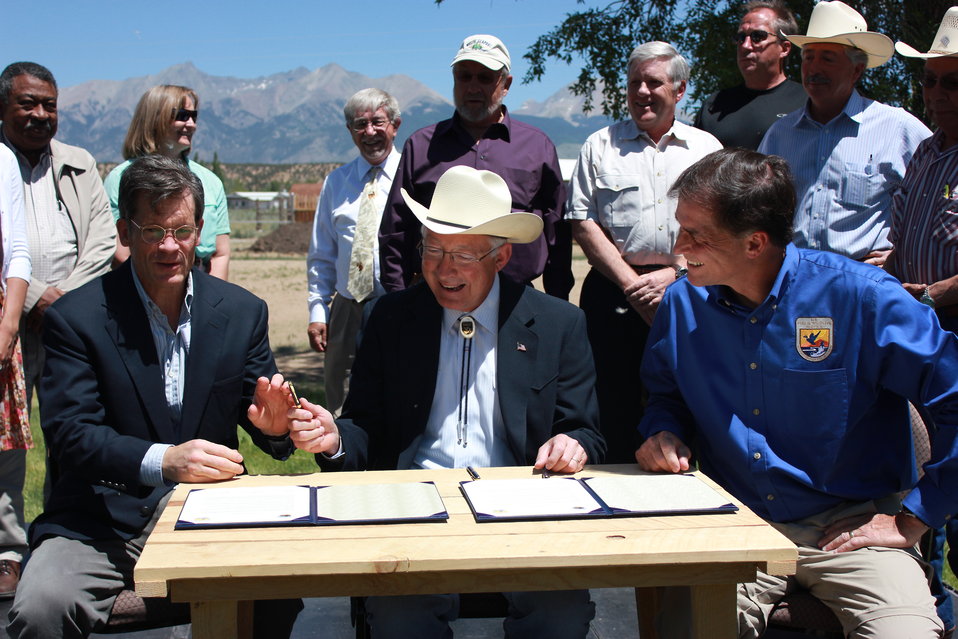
Historic Conservation Easement in Sangre de Cristo Mountains